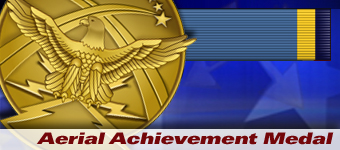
Aerial Achievement Medal spotlight